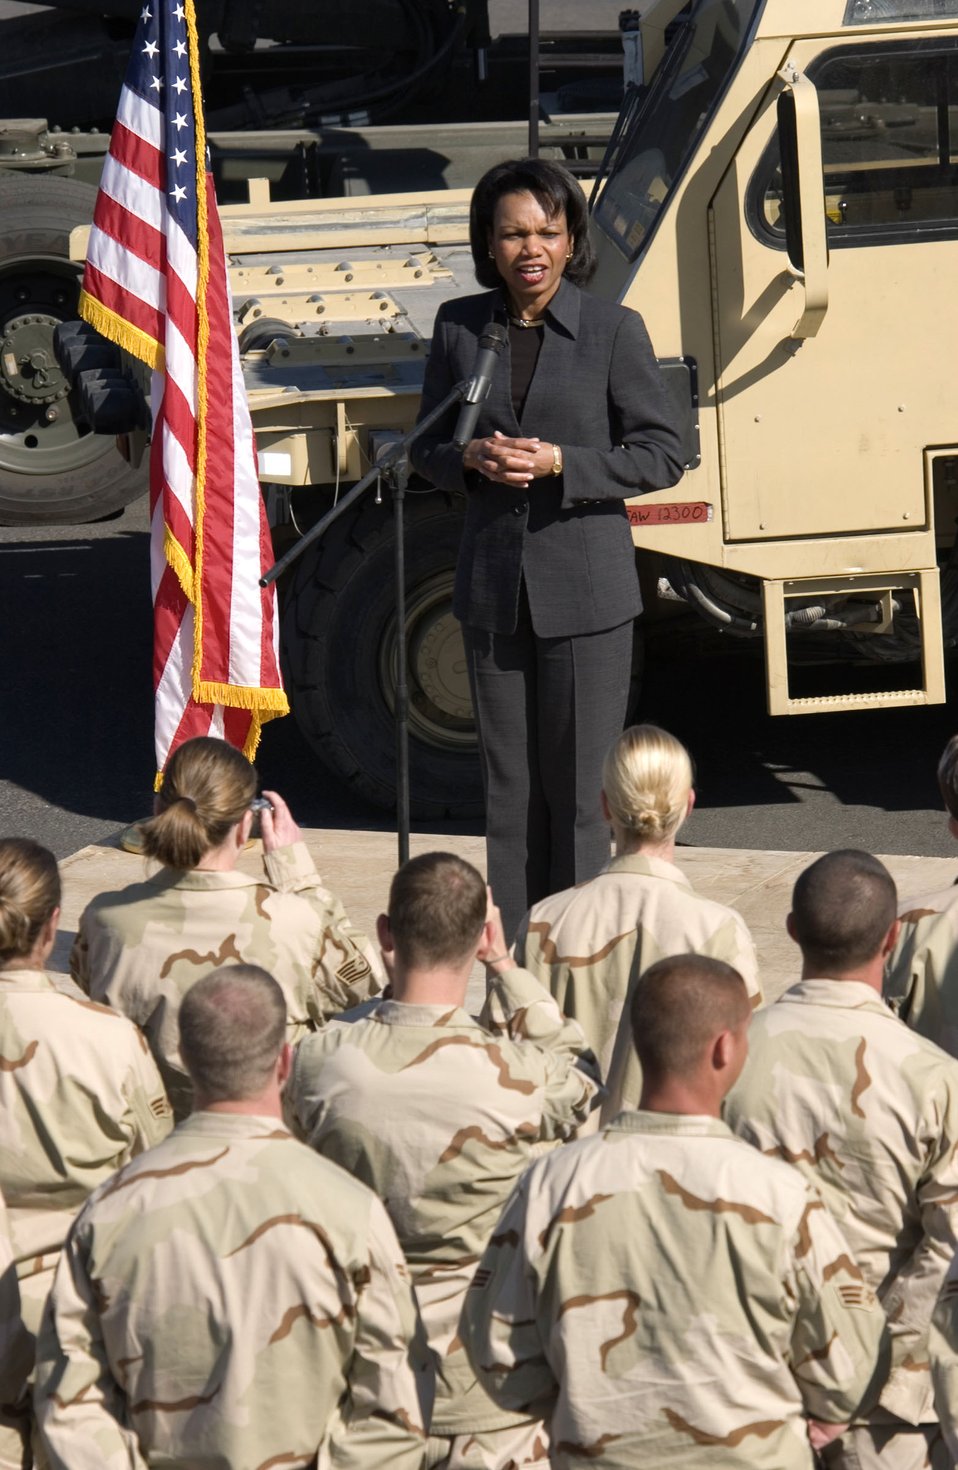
Operation Enduring Freedom

MANAS AIR BASE, Kyrgyzstan -- Secretary of State Condoleezza Rice speaks to Airmen here Oct. 11. Secretary Rice visited with the base briefly on her stop in Kyrgyzstan, the first in a series of countries she was planning to visit in Central Asia.